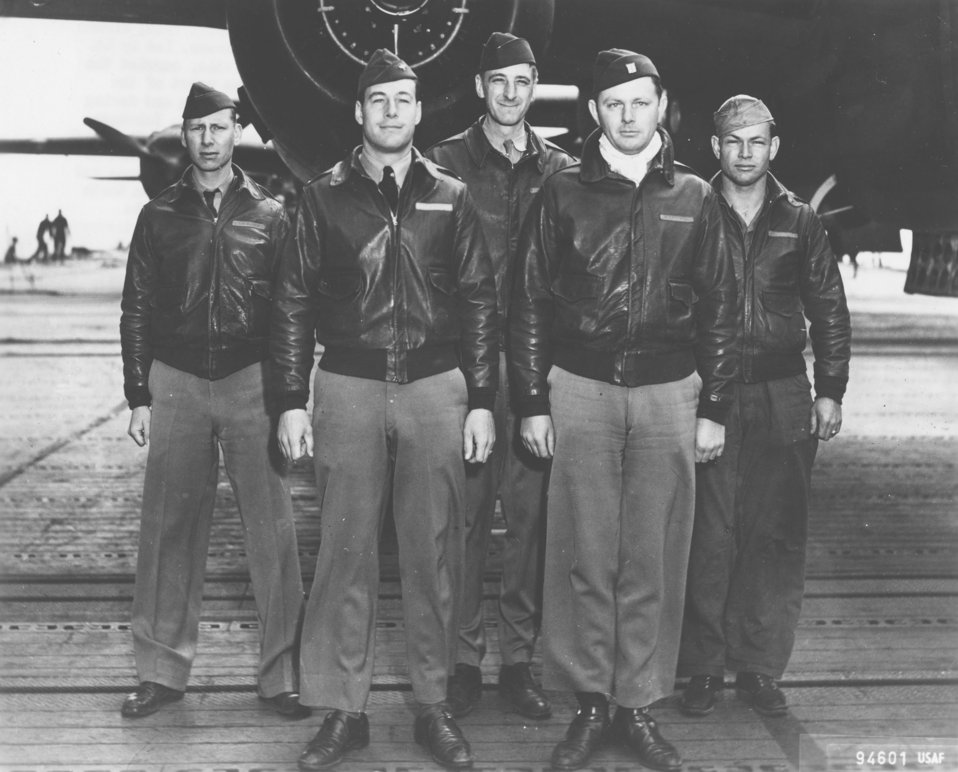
Doolittle Tokyo Raiders, Crew No. 2

Crew No. 2 (Plane #40-2292, target Tokyo): 37th Bombardment Squadron, front row: Lt. Travis Hoover, pilot; Lt. William N. Fitzhugh, copilot; back row: Lt. Carl R. Wildner, navigator; Lt. Richard E. Miller, bombardier; and Sgt. Douglas V. Radney, flight engineer/gunner.